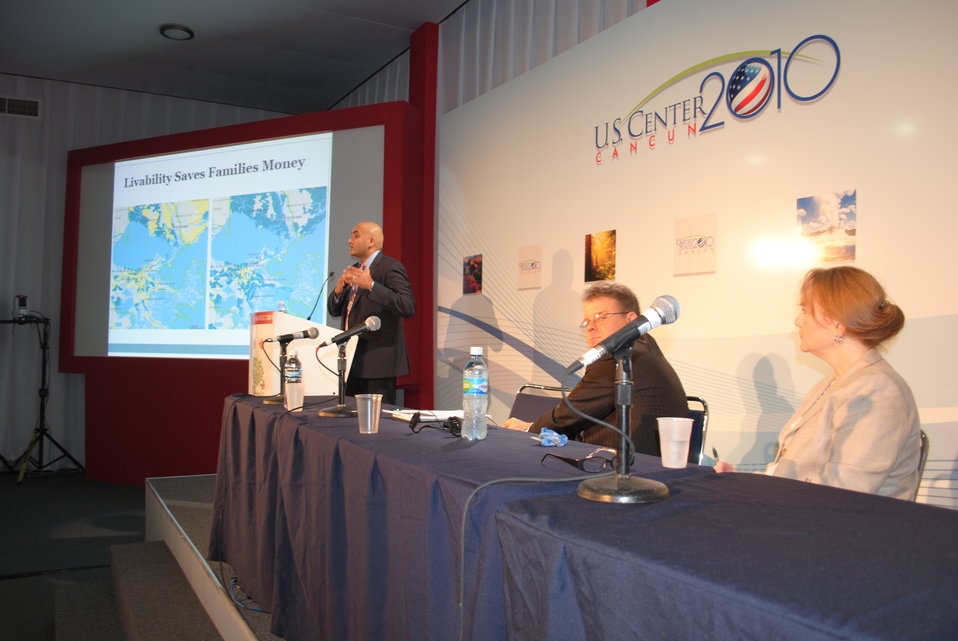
U.S. Department of Transportation's Shailen Bhatt Presents “Livability”

Shailen Bhatt of the U.S. Department of Transportation presents the side event, “Livability,” at the U.S. Center at COP-16 in Cancun, Mexico, on December 1, 2010.